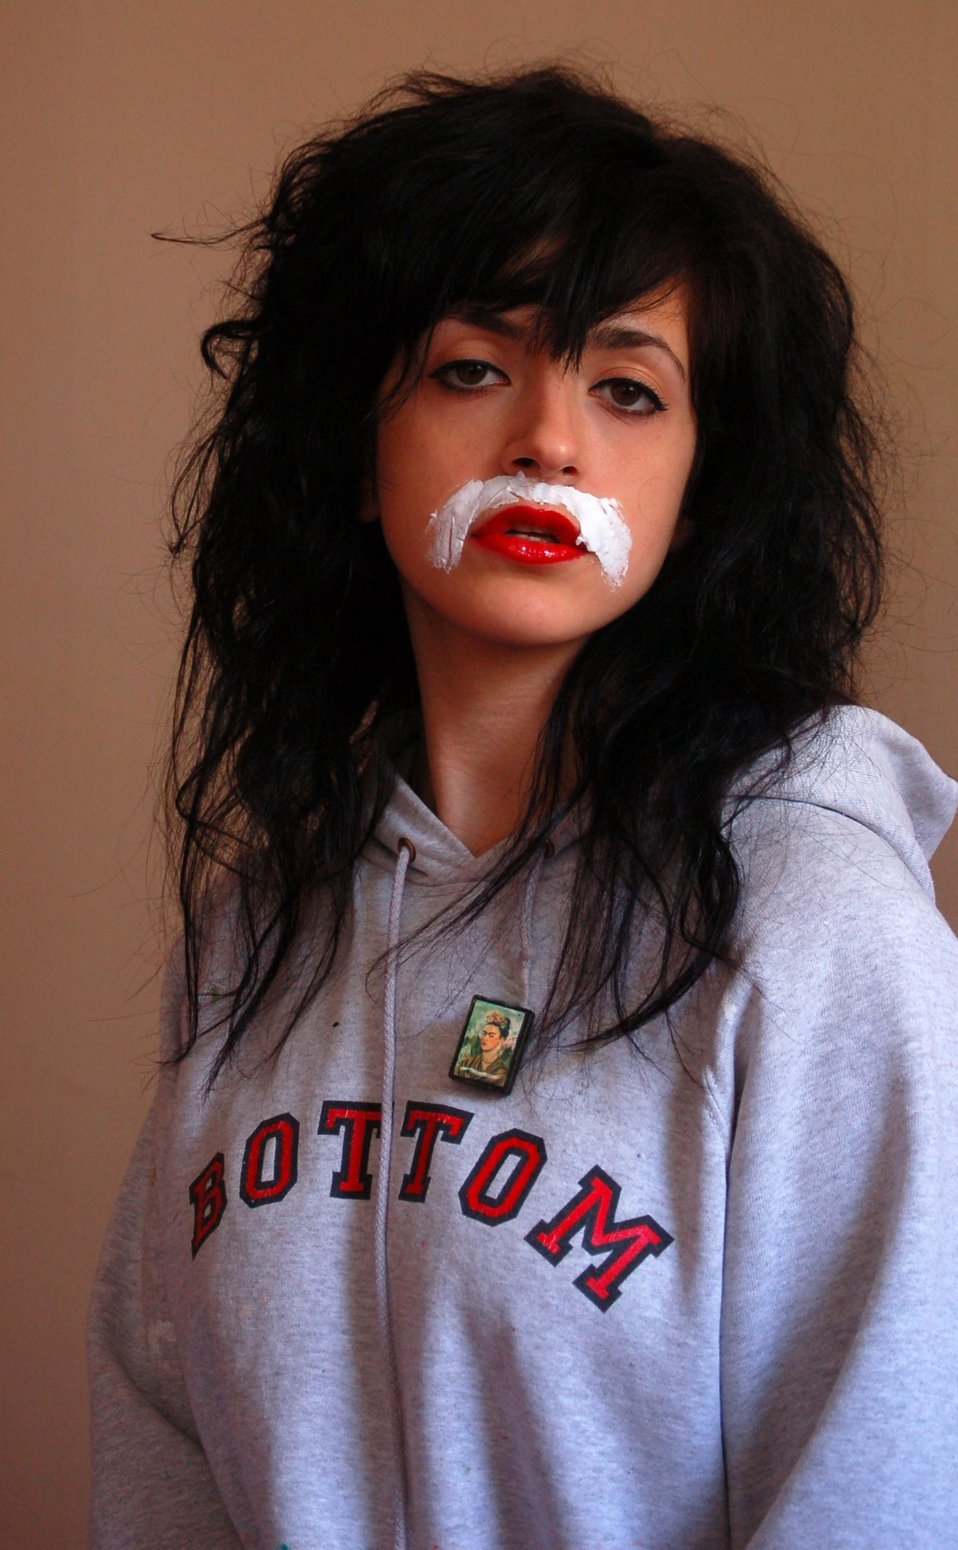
'A Tribute to Frida' (Sara Maple) digital print - 60 x 40cm